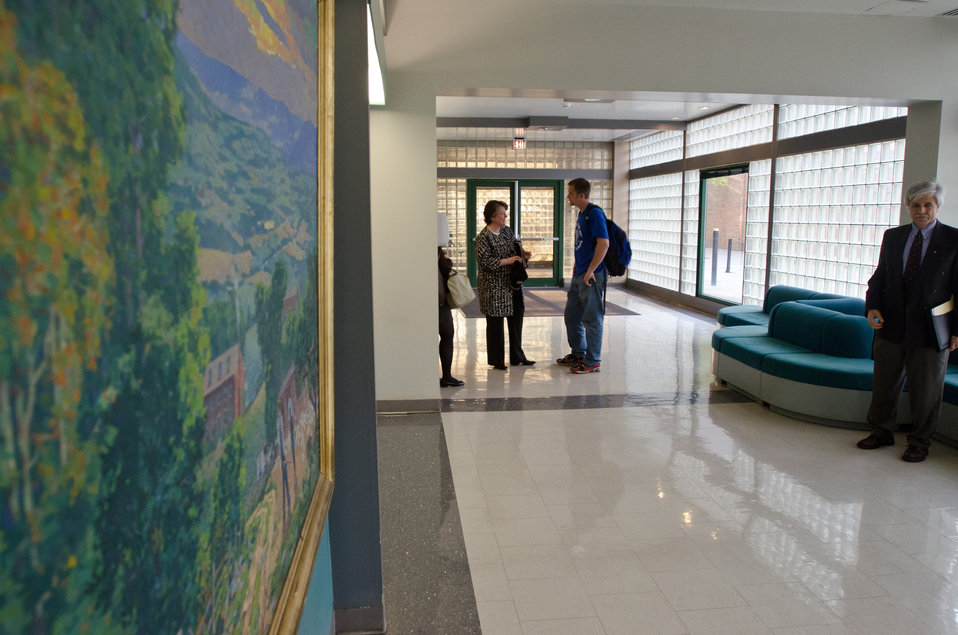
U.S. Department of Agriculture (USDA) Deputy Secretary Kathleen Merrigan stopped to listen and talk with to a student after her presentation of the “Know your Farmer Know your Food” initiative to students and faculty at the Animal Sciences / Agricultural Engineering Building at the University of Maryland, in College Park, MD, on Thursday, April 7, 2011. Deputy Secretary Merrigan’s interactive presentation utilized wireless polling in the lecture room to present questions to the audience who used handheld devices to choose from a list of multiple answers. Their answers were instantly tabulated, then Merrigan revealed their top choice on the screen, followed by the correct answer, usually revealing an error and misconceptions. Her talk covered support of local farmers; strengthening rural communities, promoting healthy eating, protecting natural resources; grants, loans and other support USDA provides as well as stories of innovation; industry and government cooperation; and careers opportunities in agriculture, ranching and the USDA.